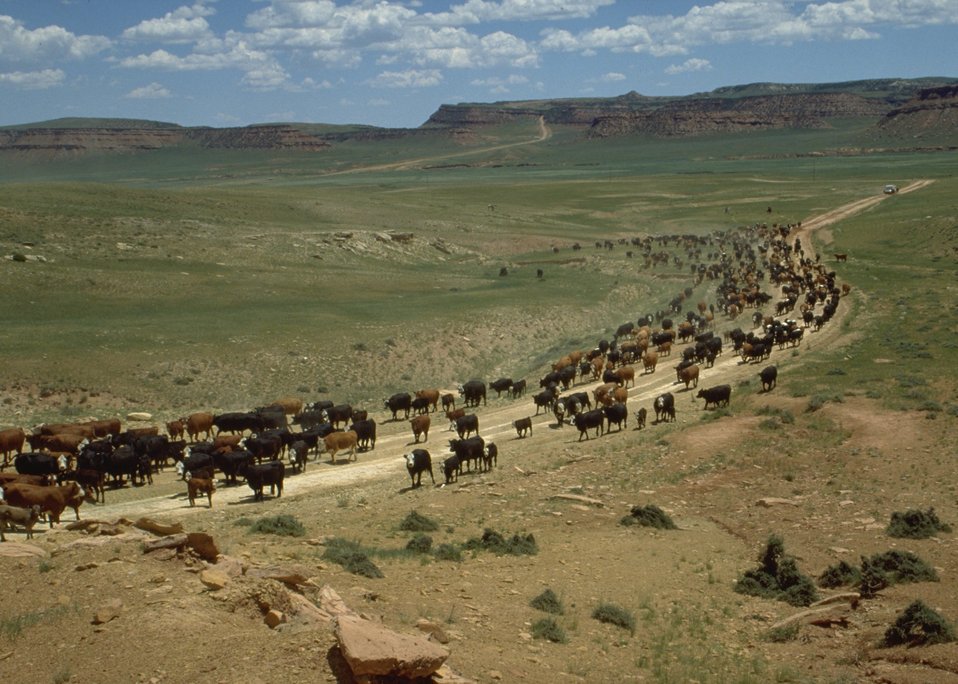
Cattle drive.